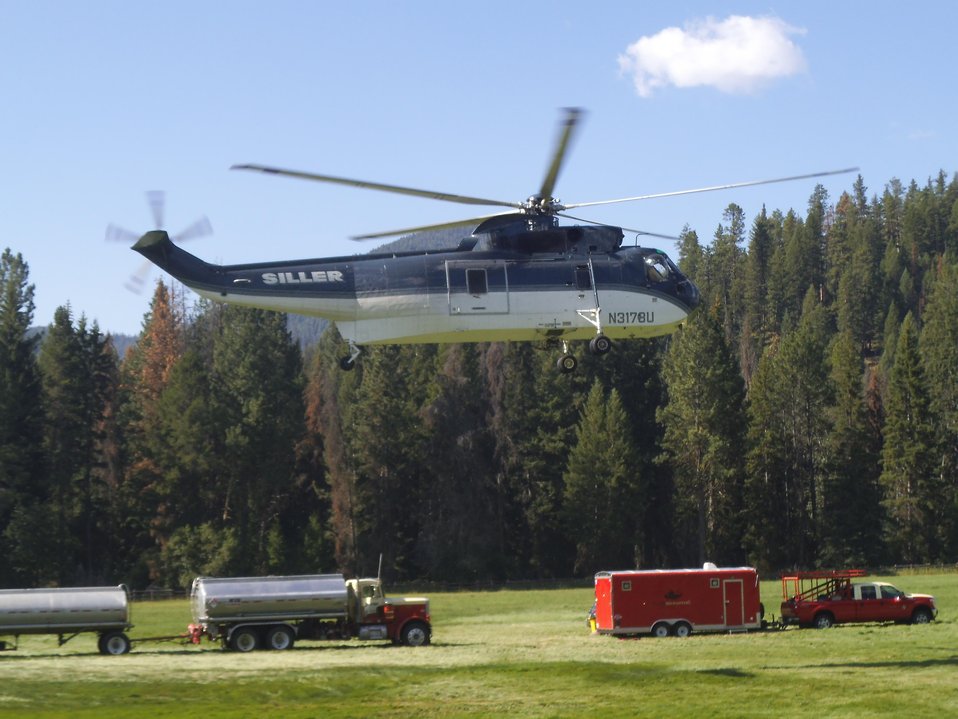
A Type 1 helicopter lifts off from Gold Pan Helibase in MT. Type 1 helicopters are used in water drops over the fire. These helicopters have delivered over 200,000 gallons of water by bucket. The Gold Pan Fire in the Bitterroot National Forest near Conner, MT began by lightning on Jul. 16, 2013 by lighting have consumed approximately 16,412 acres.